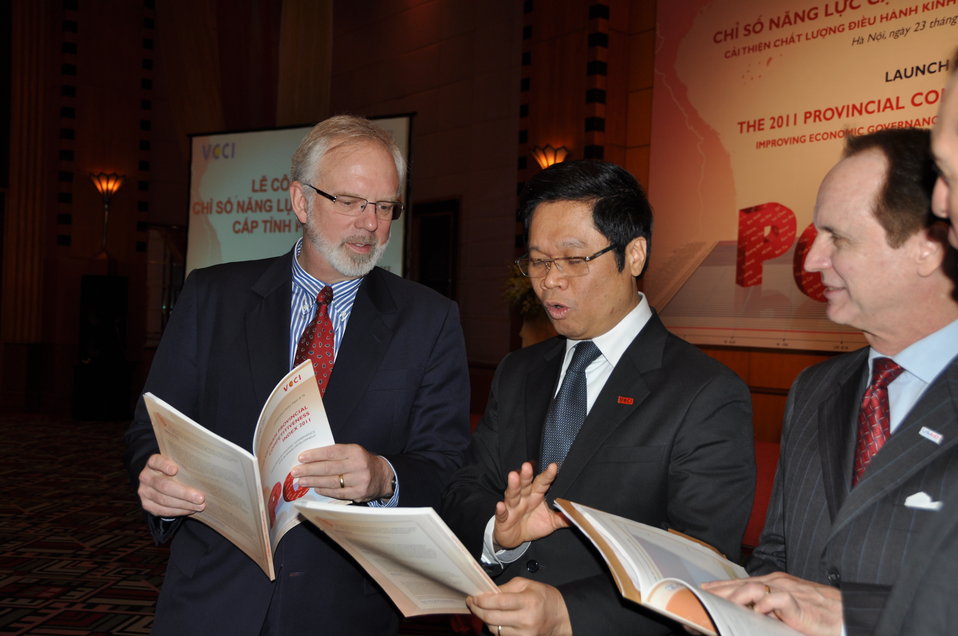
U.S. Ambassador David B. Shear at the Provincial Competitiveness Index 2011 Launch